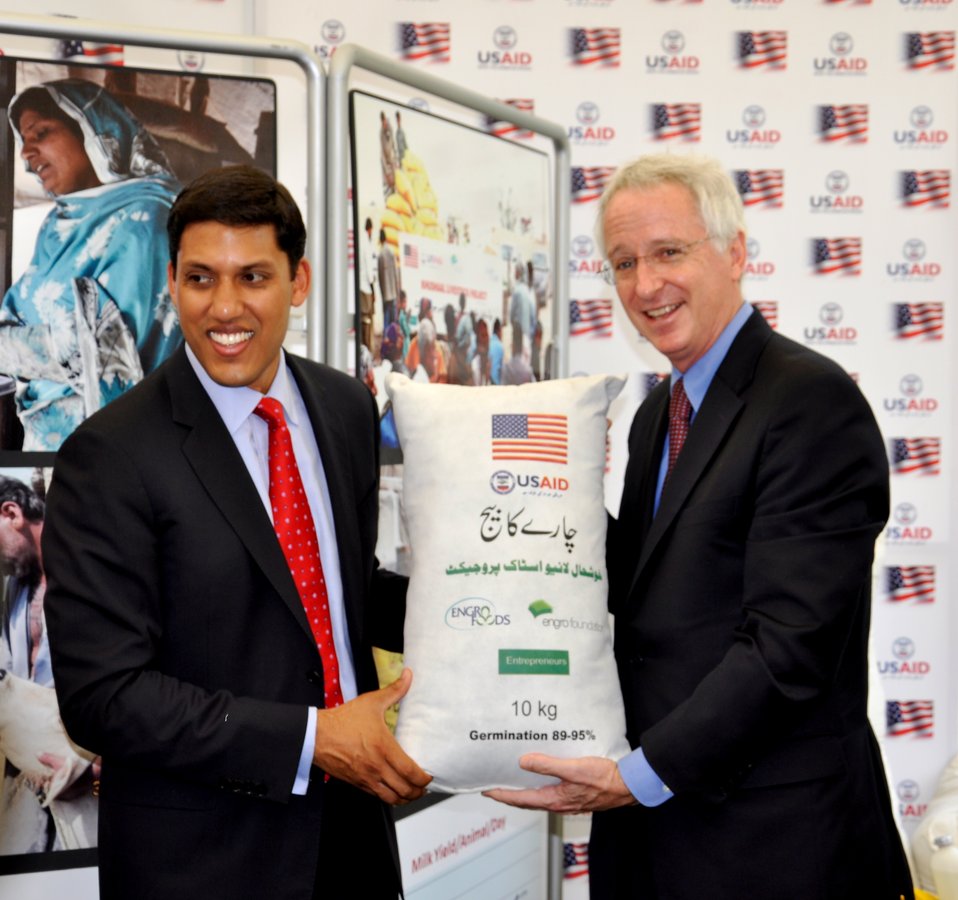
Dr. Shah and Ambassador Munter